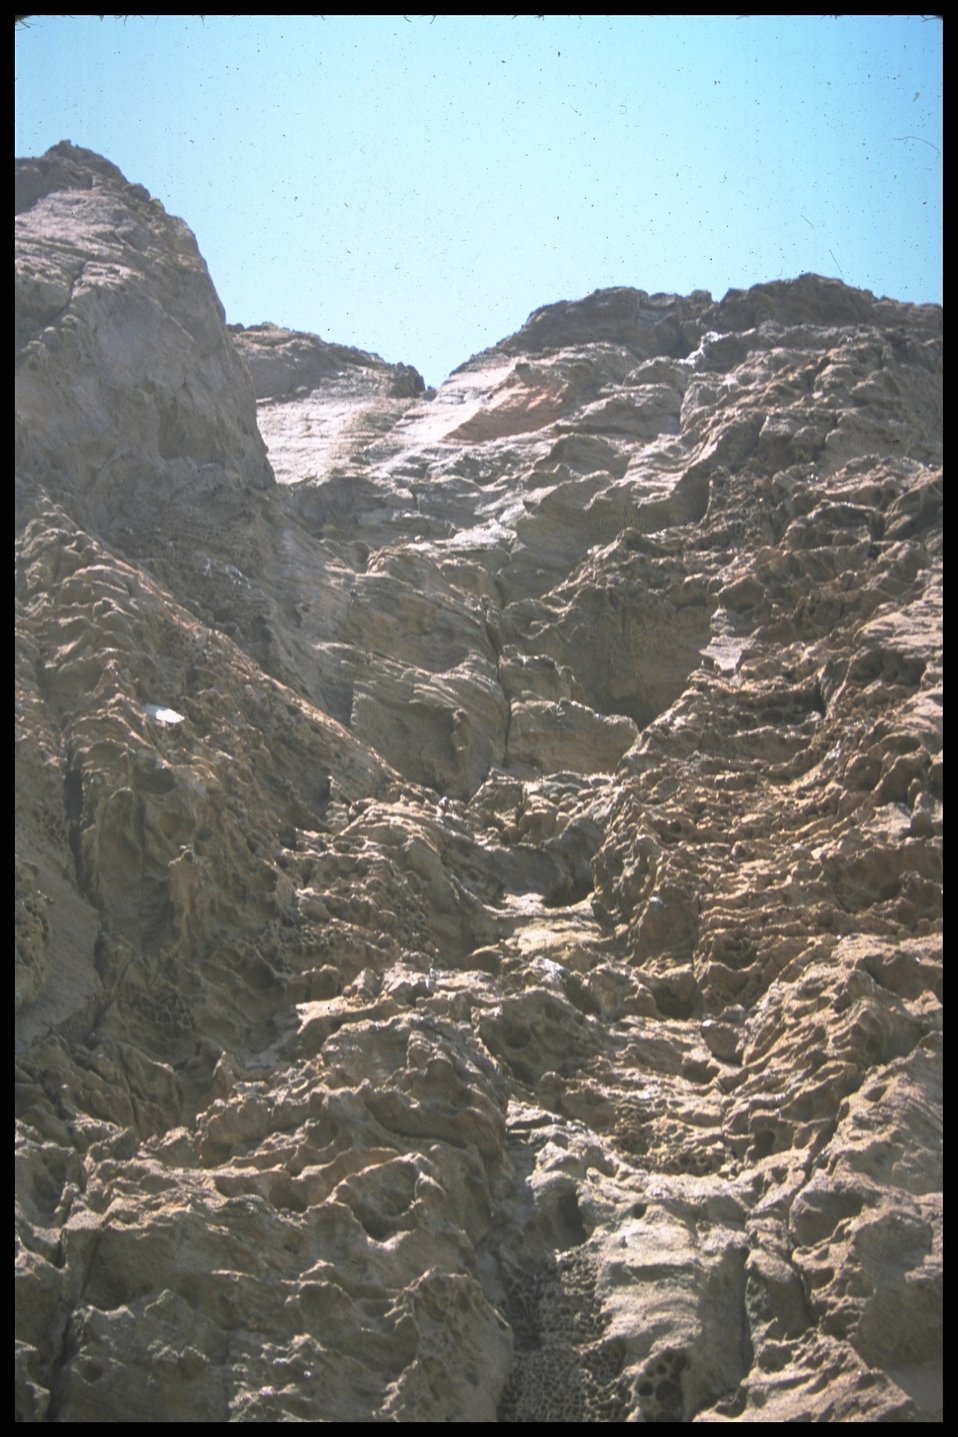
Scenic View. Ft. Rock, Lakeview District.